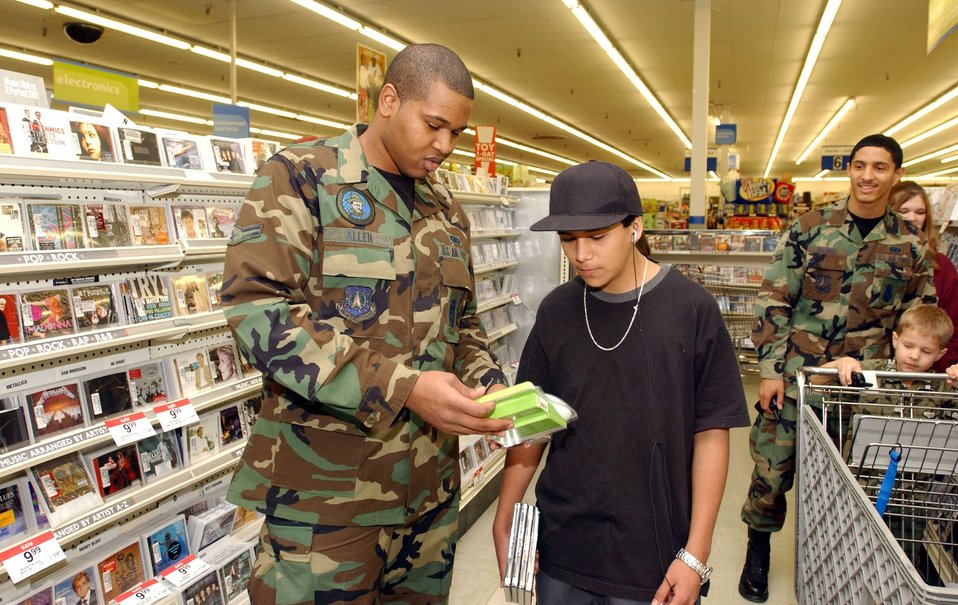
Shop with a Cop

MINOT AIR FORCE BASE, N.D. (AFPN) -- Airman 1st Class Bryant Allen shops for video games with Frankie Garcia, a local youth. Along with local police agencies more than 100 Security Forces Airmen volunteered their time to shop with more than 130 local children as part of the base's annual